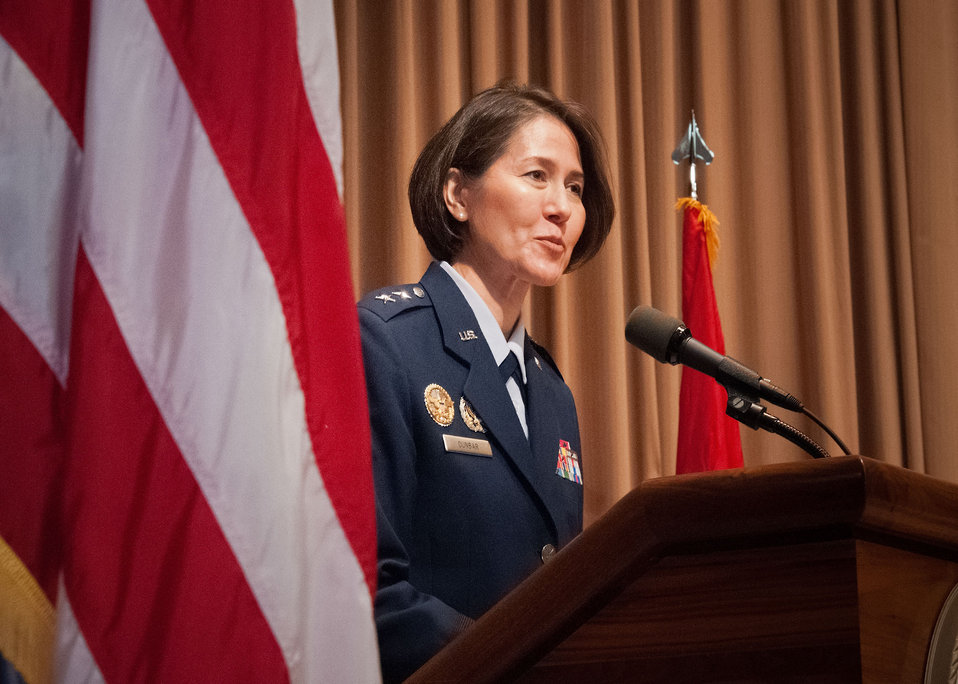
U.S. Air Force Major General Commander, Air Force District of Washington, Joint Base Andrews, MD Sharon K.G. Dunbar speaks at the U.S. Department of Agriculture's Veterans Day Observance: Honoring All Who Served, in Washington, D.C. on Wednesday, Nov. 7, 2012. The Air Force District of Washington is the Air Force voice and component to the Joint Forces Headquarters-National Capital Region.